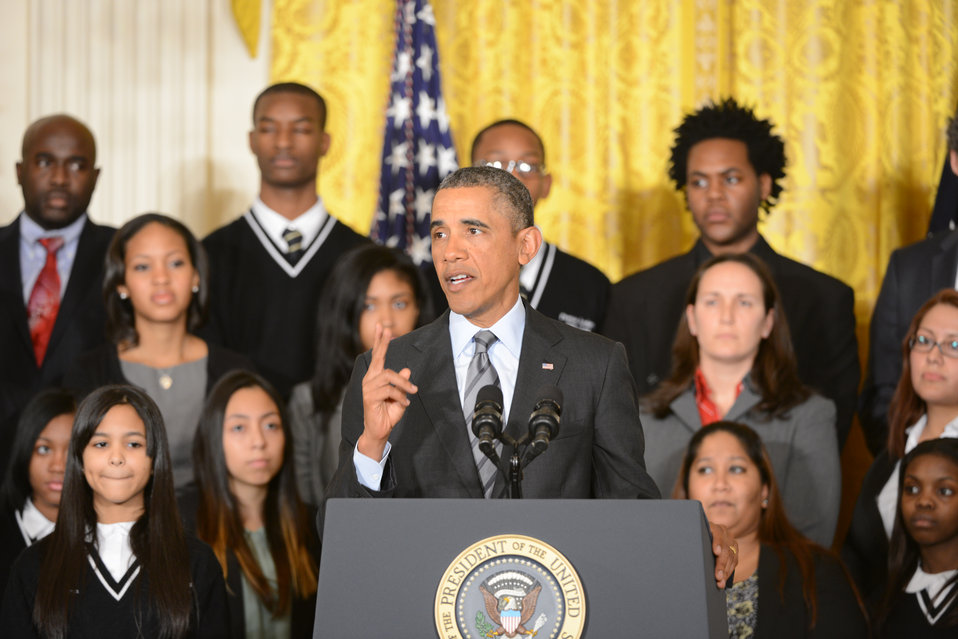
President Barack Obama announces the first five “Promise Zones,” located in San Antonio, TX, Philadelphia, PA, Los Angeles, CA, Southeastern Kentucky, and the Choctaw Nation of Oklahoma.